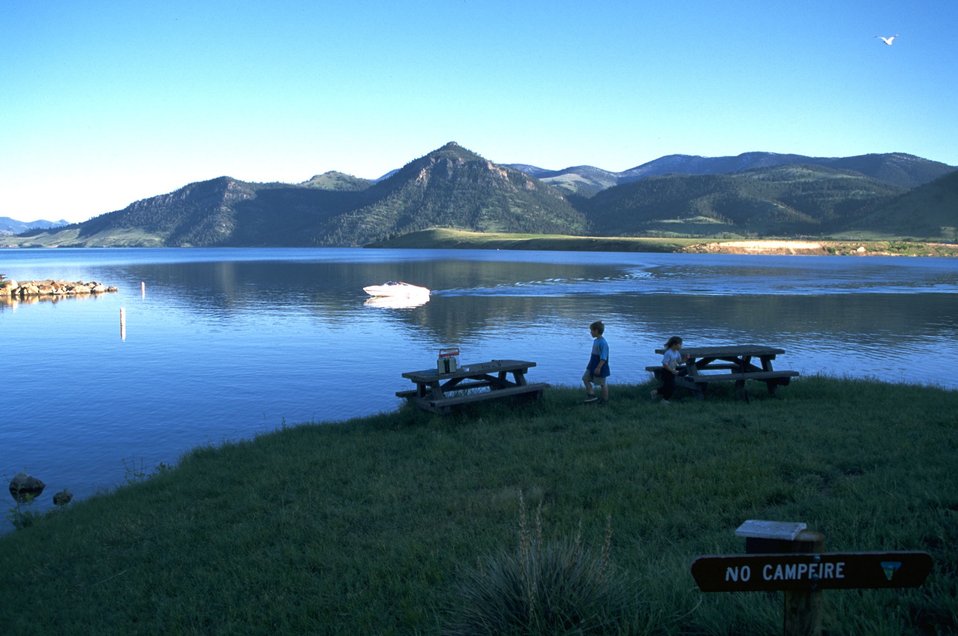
Holter Lake in the late afternoon sun